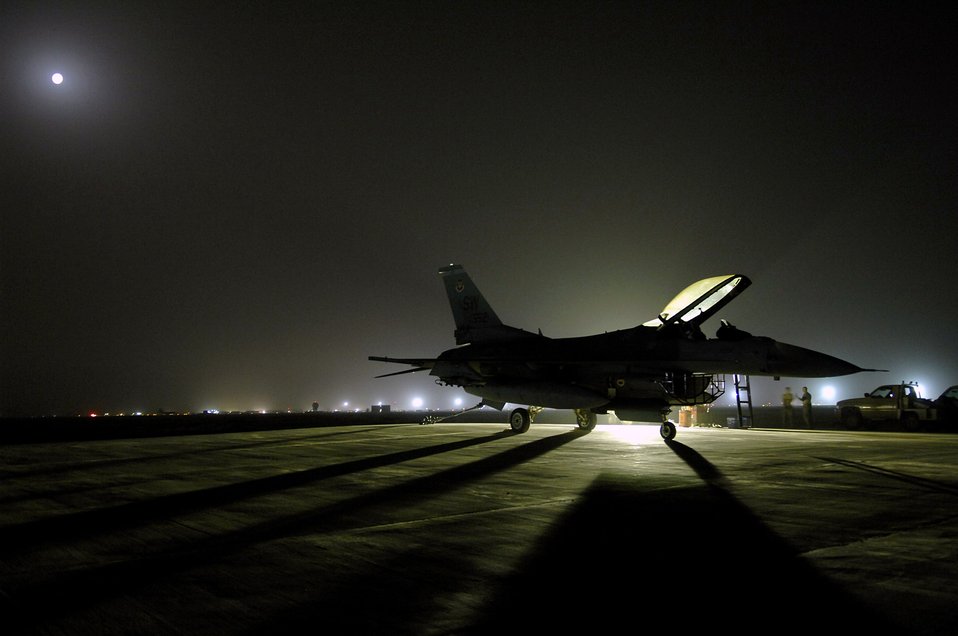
Gentlemen, start your engines!

An F-16 Fighting Falcon sits on the flightline before an engine run up July 16 at Joint Base Balad, Iraq. The run up of the engine back and forth from full afterburner to idle allows the engine mechanics and crew chiefs to ensure all systems are fully functional before putting the fighter back into operational use. The F-16 is deployed from Shaw Air Force Base, S.C.